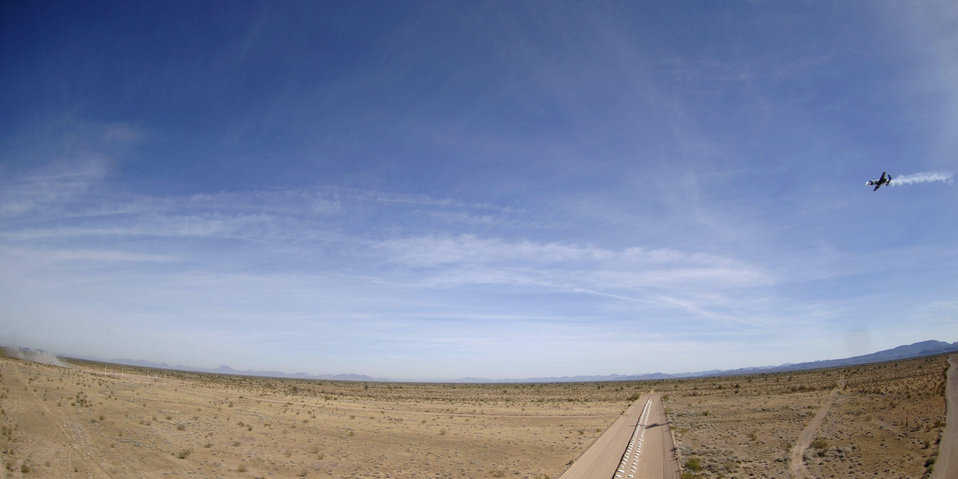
Hawgsmoke 2006

An A-10 Thunderbolt II fires its 30 mm gun at a low-angle strafe as part of the 2006 Hawgsmoke competition, Thursday, March 23, 2006, at the Barry Goldwater Range, Gila Bend Air Force Auxiliary Field. There are four parts of the competition. Each team has four members in which they have 100 bullets each to use toward the target. This year's competition coincides with the 30th anniversary of the Warthog. Twenty squadrons from around the world come together to gain the honor of the